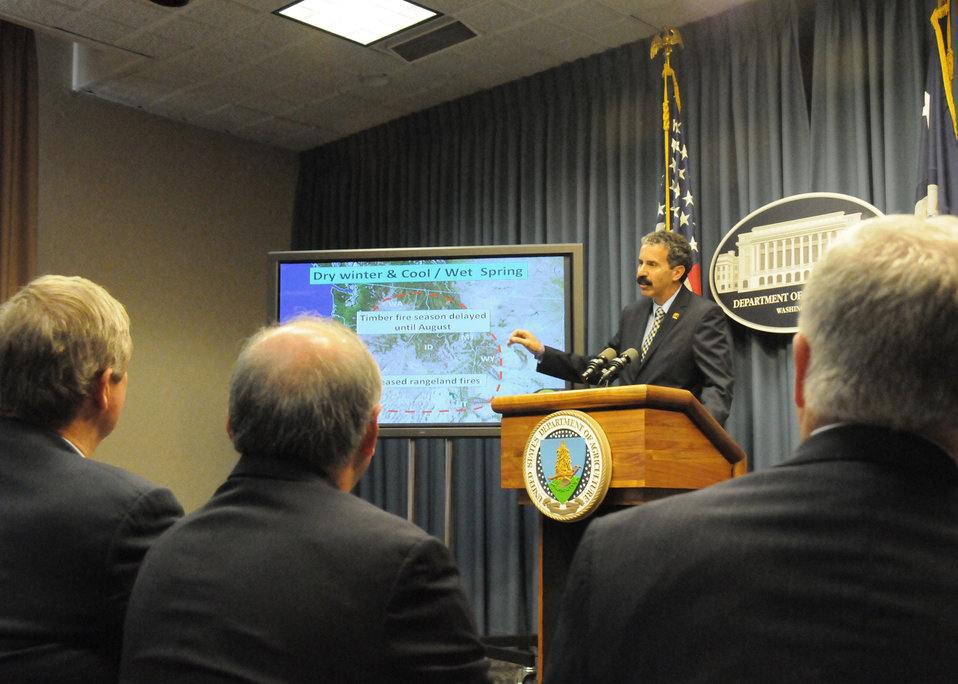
National Fire Weather meteorologist Rick Ochoa presents a slide show graphically demonstrating the fire risk assessment in the United States at a press conference held at the Department of Agriculture in Washington, DC, on Thursday, June 14, 2010. (Seated L to R Agriculture Secretary Tom Vilsack, Interior Secretary Ken Salazar, and Forest Service Chief Tom Tidwell). USDA photo 10di1408-68.